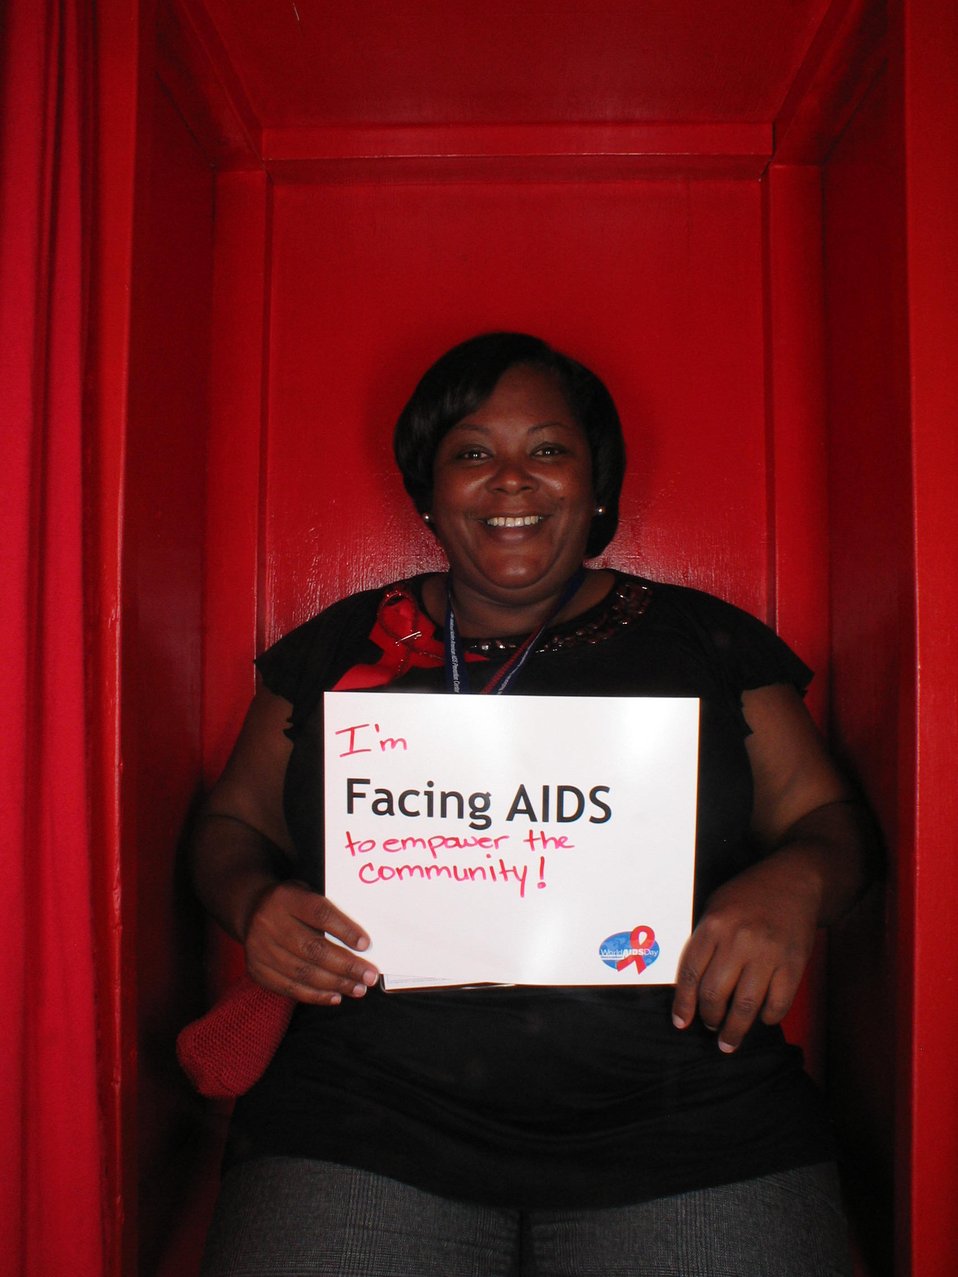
I'm Facing AIDS to empower the community